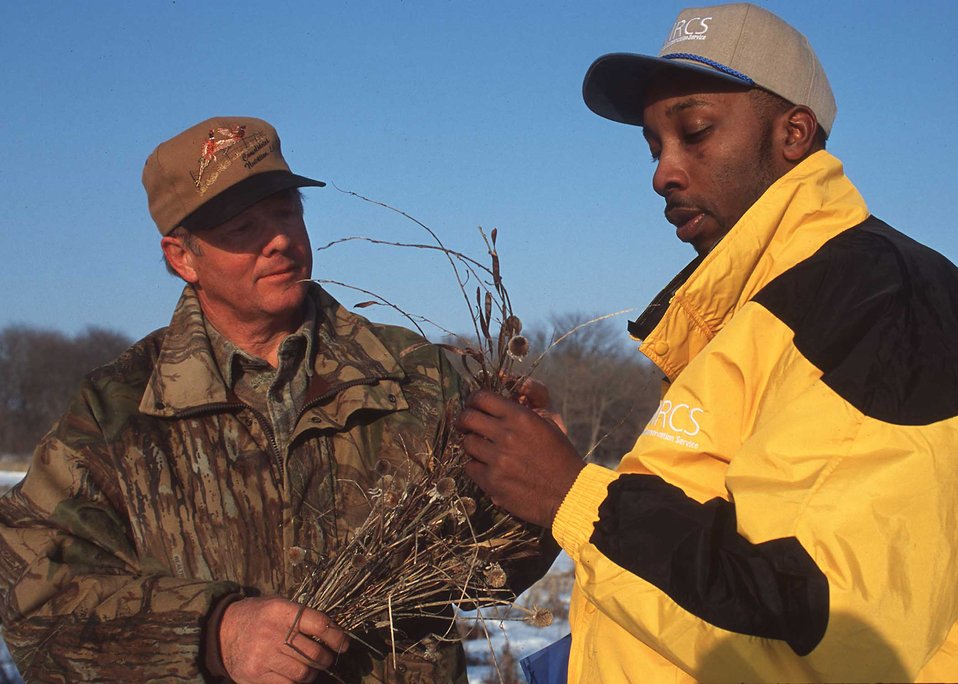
A Montgomery County landowner and NRCS conservationist discuss wildlife plantings on the farm. Both food and cover are important to wildlife.